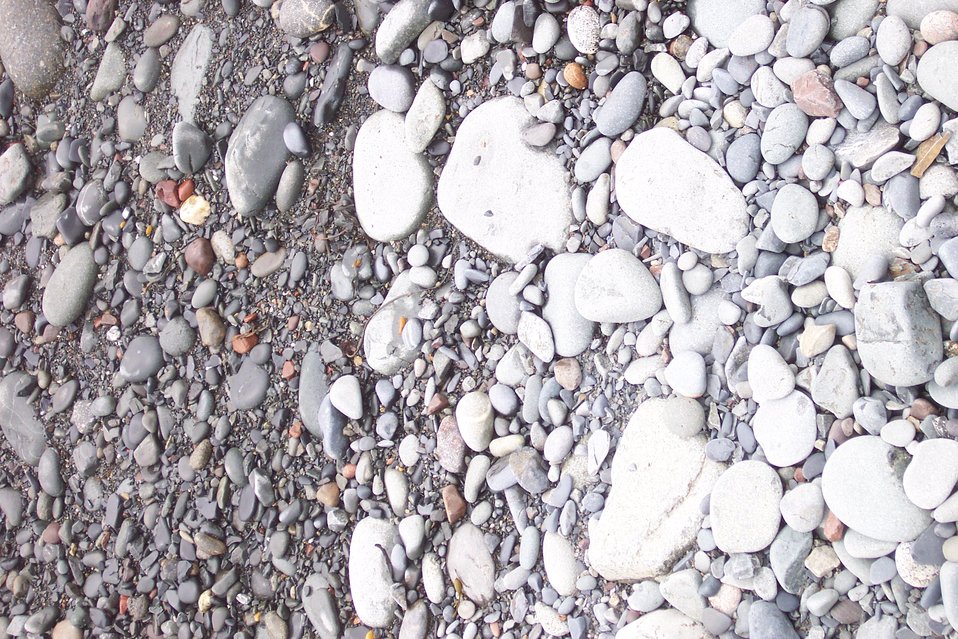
The high tide line is marked by wet rocks on the left and dry on the right on the cobble beach at West Quoddy Head.